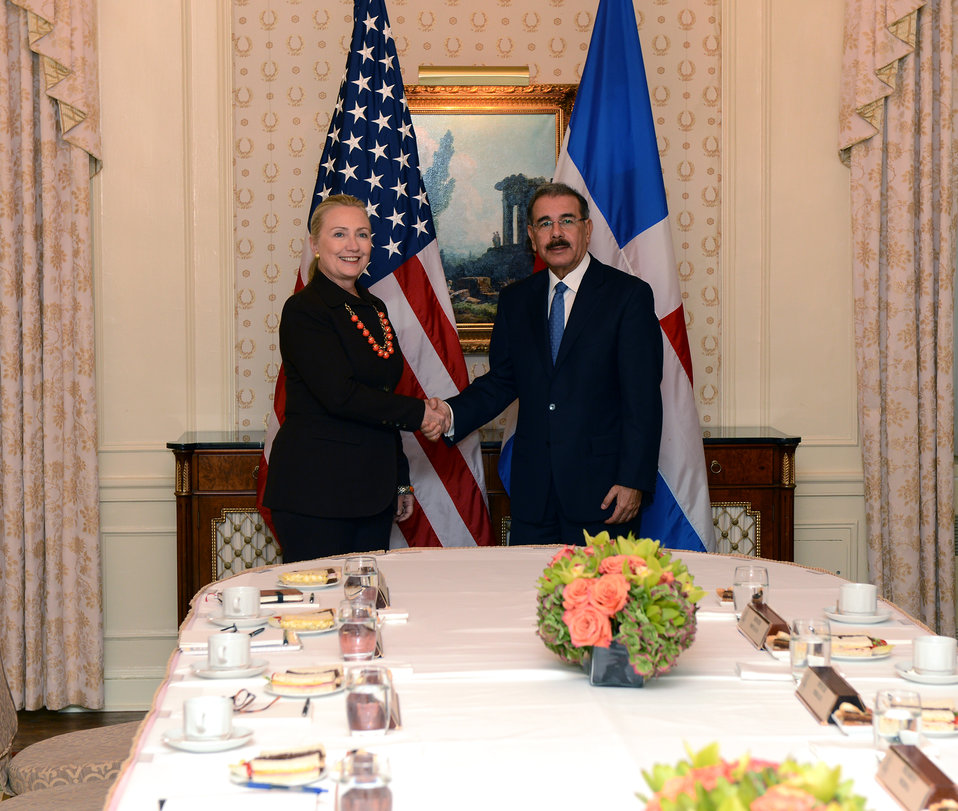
Secretary Clinton Meets With Dominican Republic President Medina

U.S. Secretary of State Hillary Rodham Clinton meets with Dominican Republic President Danilo Medina in New York, New York on September 23, 2012.